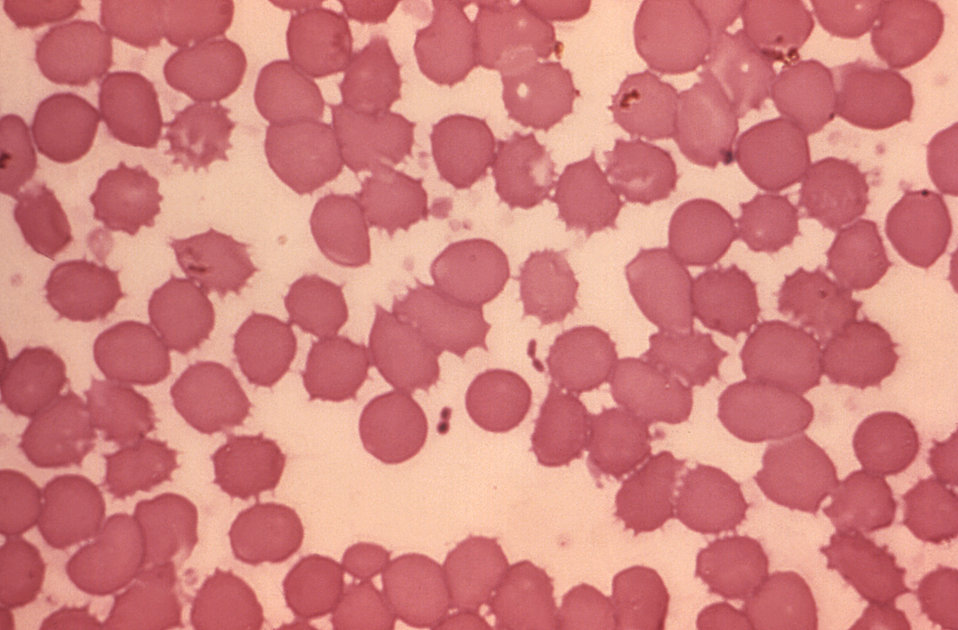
This is a micrograph of a blood smear containing Yersinia pestis plague bacteria.